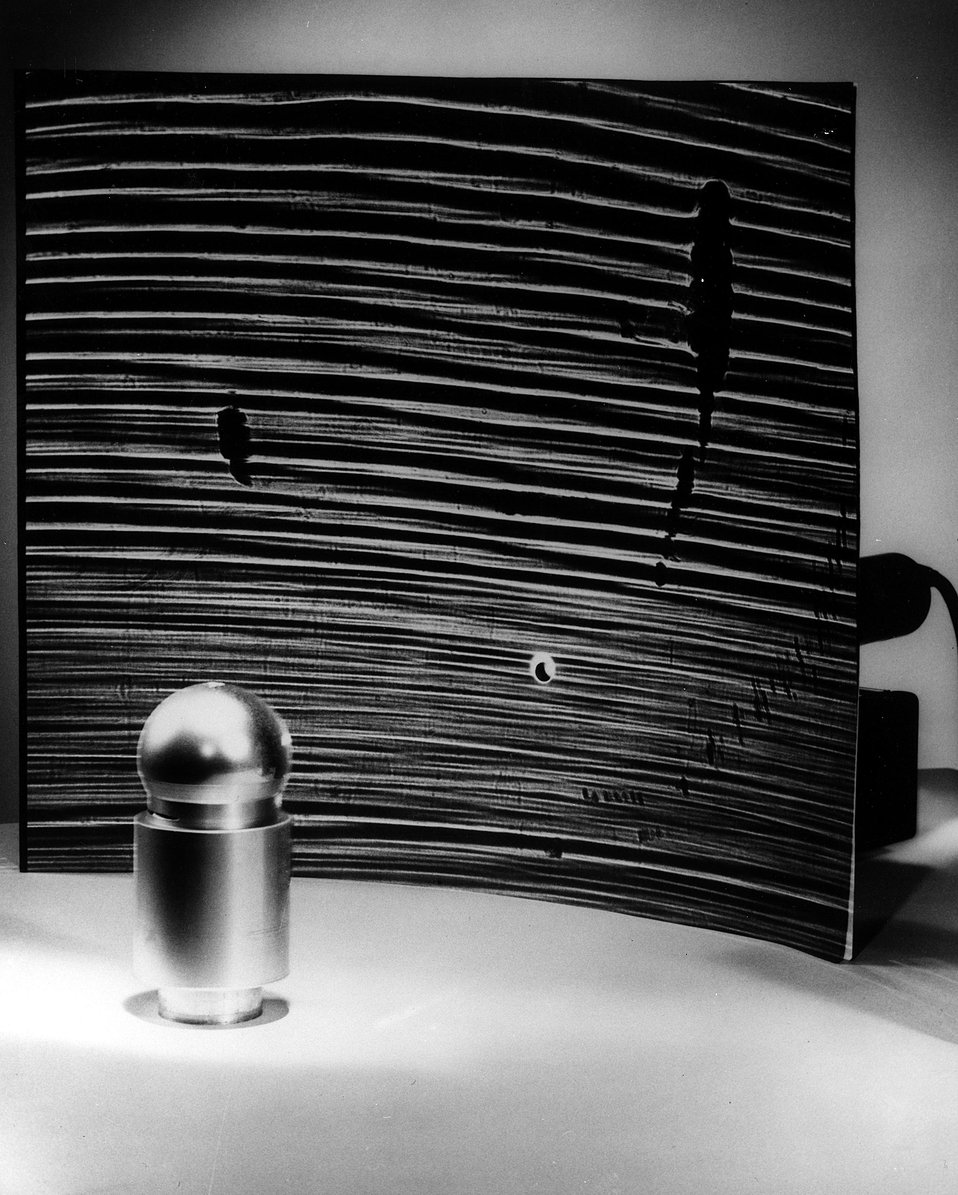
The Oak Ridge, Tennessee, Y-12 Plant has developed an optical method of evaluating the surface finish of machined, spherical parts over the range of one to ten microinches. A helium neon laser is aimed through a one-half-inch diameter hole to strike a metal workpiece being inspected.